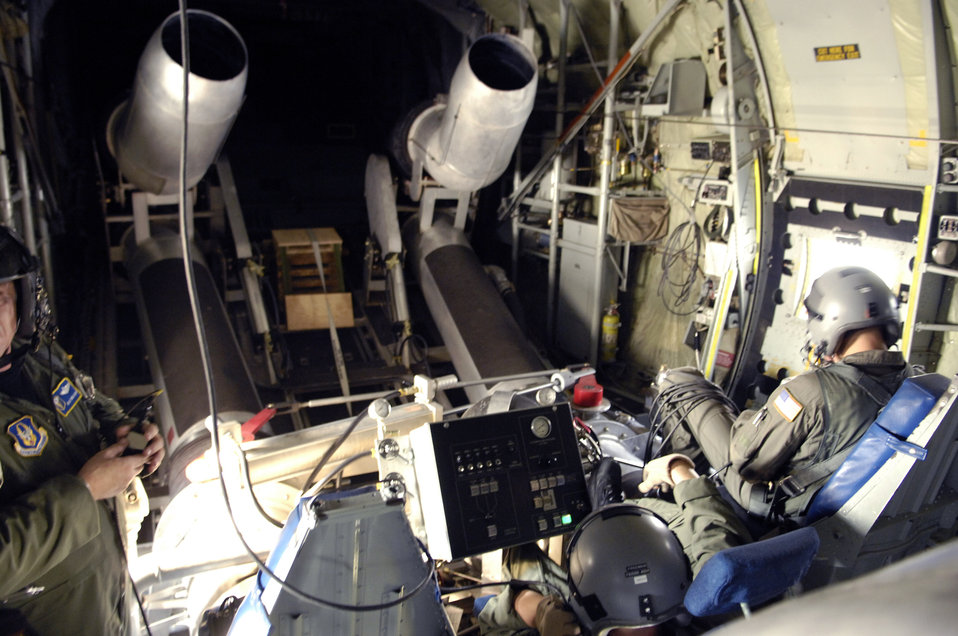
C-130s fight California wildfires

Master Sgt. Tom Freeman (left) and Tech. Sgt. Lamont Wood prepare to deploy 3,000 gallons of fire retardant Oct. 24 over the Poomacha fire in North San Diego County, Calif. The C-130 Hercules and crew are assigned to the 302nd Airlift Wing from Peterson Air Force Base, Colo. The aircraft launched from Channel Islands Air National Guard Station, Calif. Air Force Reserve Command officials are participating in the Southern California firefighting effort.